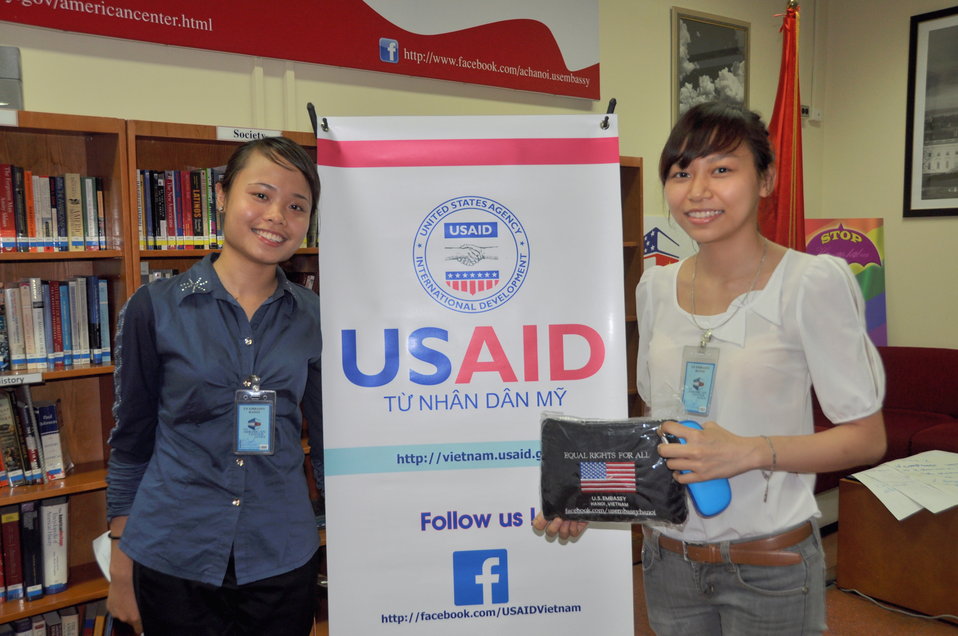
Climate Change Talk at the American Center

Hanoi, May 28, 2013.